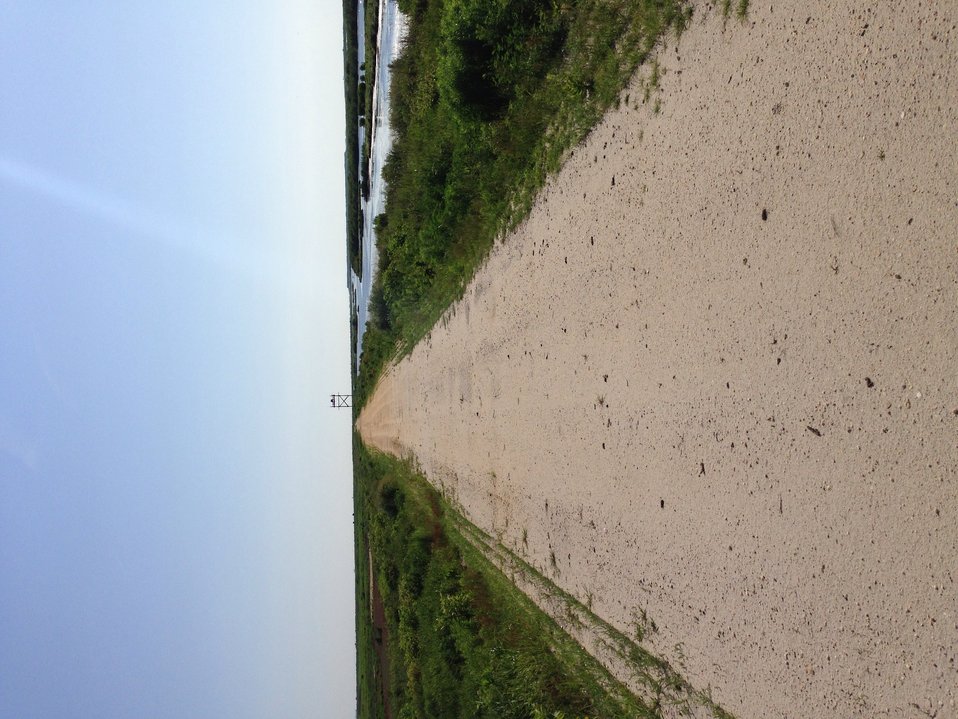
Forsythe wildlife drive after hurricane repairs

South end of cross dike looking north.